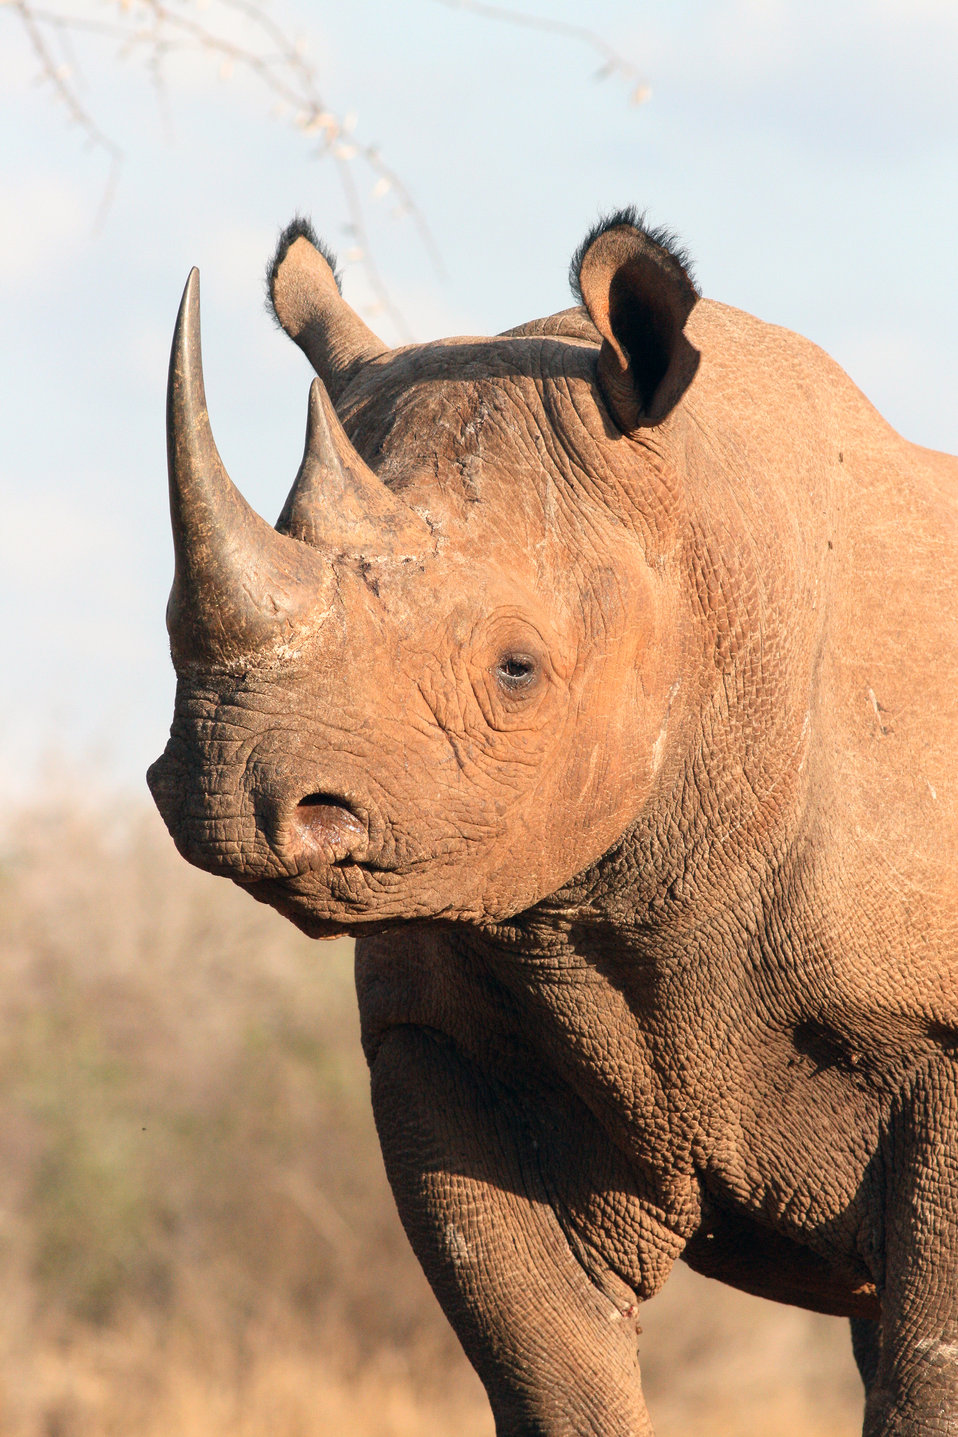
Black rhino (head and shoulder view)